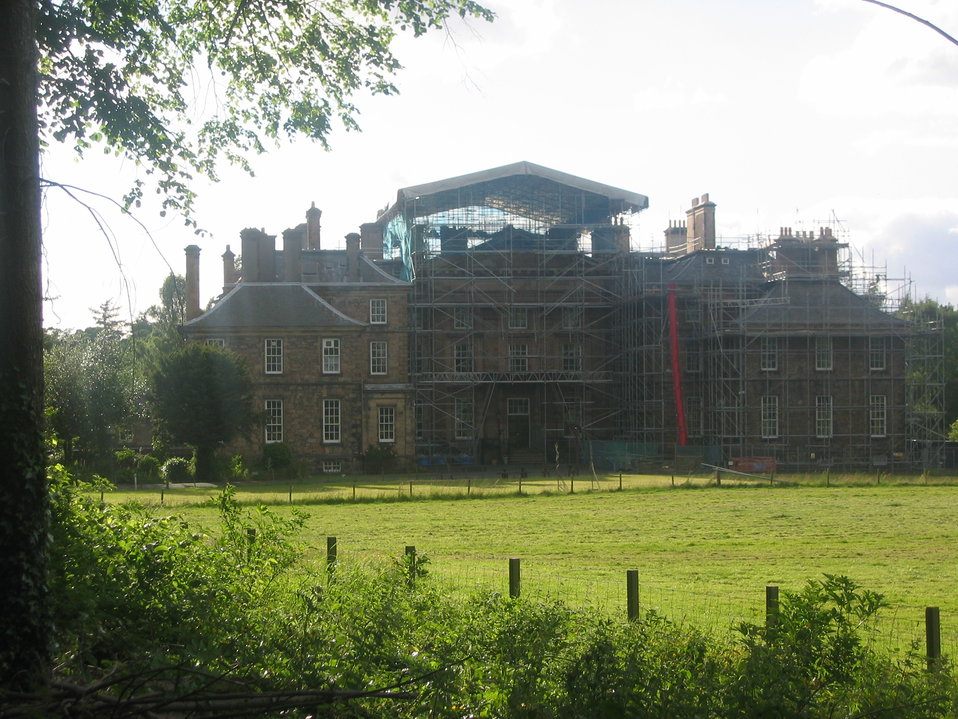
Dalkeith Palace, Midlothian, Scotland